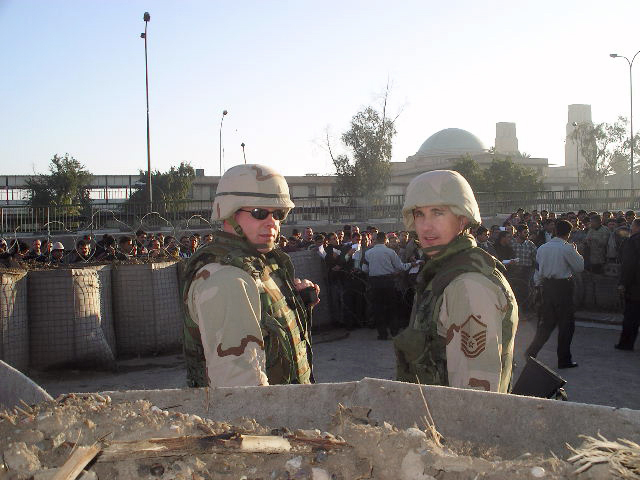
Recruiting in Iraq

IRAQ -- Capt. Pete Ellum (left) and Master Sgt. Greg Elmore wait outside a recruiting station here. They are recruiting for the Iraqi armed forces, border patrol, police force, facilities-protection service and other agencies here. Captain Ellum is deployed from the 319th Recruiting Squadron at Portsmouth, N.H. Sergeant Elmore is from Air Force Recruiting Service at Randolph Air Force Base, Texas.